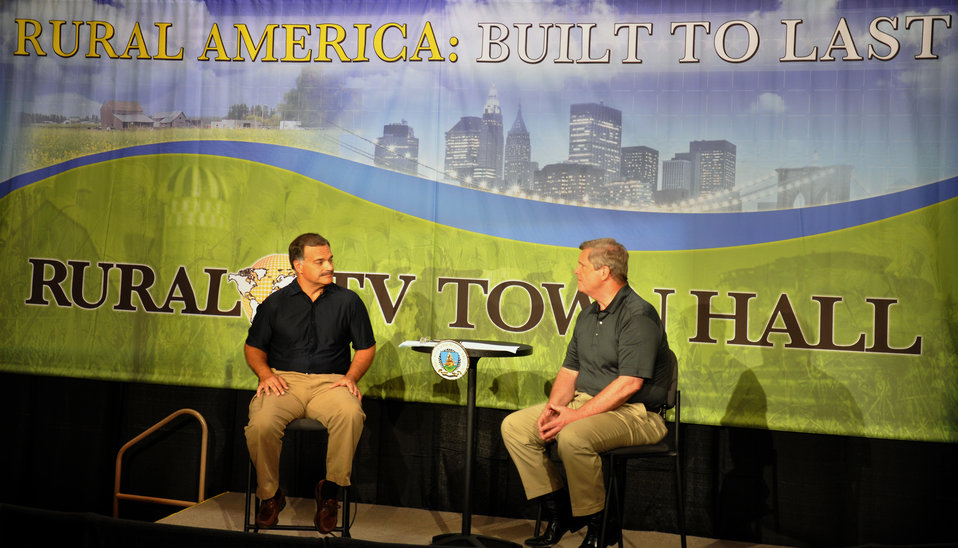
RFD-TV Host Max Armstrong (left) and USDA Agriculture Secretary Tom Vilsack (right) at a town hall meeting on RFD-TV at the Iowa State Fair in Des Moines, Iowa, on Thursday, August 16, 2012.

The Secretary was in Iowa As part of continuing steps by the Obama Administration to assist livestock producers in response to the historic drought, USDA will utilize nearly $16 million in financial and technical assistance to immediately help crop and livestock producers in 19 states cope with the adverse impacts of the historic drought. In addition, USDA will initiate a transfer of $14 million in unobligated program funds into the Emergency Conservation Program. These funds can be used to assist in moving water to livestock in need, providing emergency forage for livestock, and rehabilitating lands severely impacted by the drought. Together these efforts should provide nearly $30 million to producers struggling with drought conditions.Most recently, Secretary Vilsack signed disaster designations for an additional 44 counties in 12 states including Iowa as primary natural disaster areas due to damage and losses caused by drought and excessive heat.